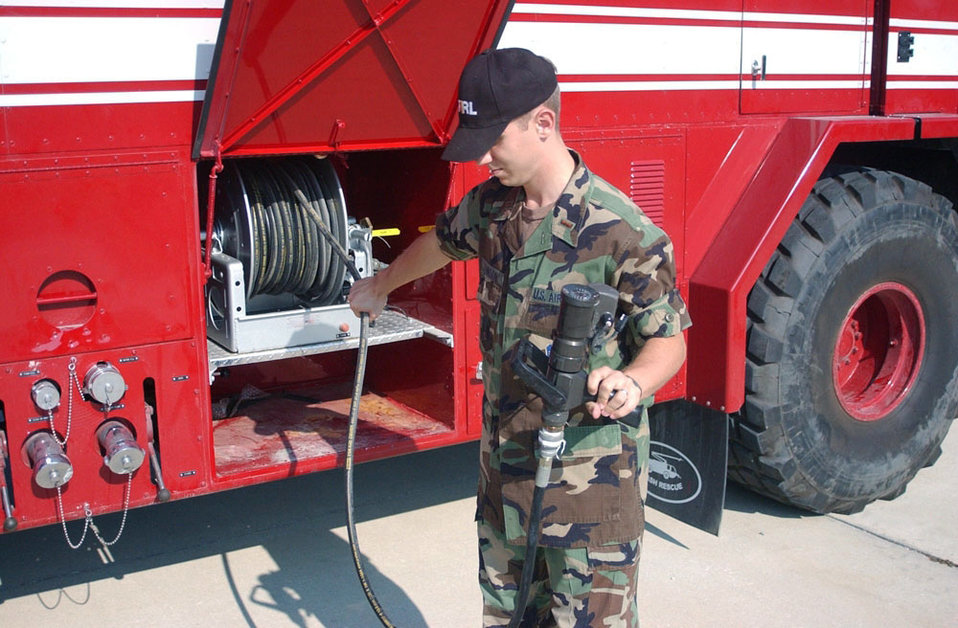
AFRL tests new firefighting technology

TYNDALL AIR FORCE BASE, Fla. -- Second Lt. Bob Johnson prepares the ultra-high pressure fire-extinguishing system for use. He is the fire research group project officer here.